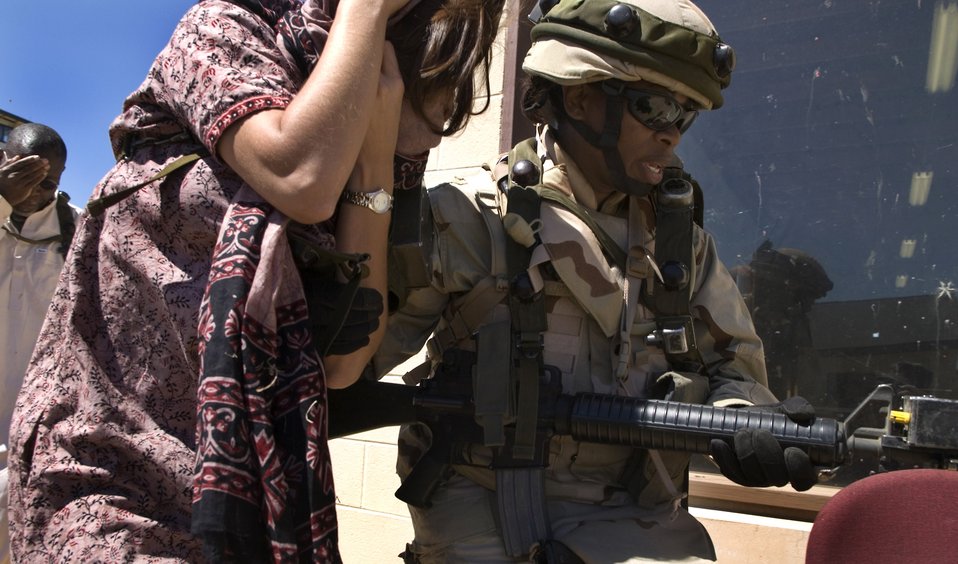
Provincial Reconstruction Team training

Capt. Jacqueline King, a physician assistant from Hickam Air Force Base, Hawaii, helps simulated victims during training Tuesday, April 4, 2006, at Fort Bragg, N.C. Captain King is part of a multi-service provincial reconstruction team whose aim is to help with the reconstruction, security and governing of Afghanistan. The team is training in the United States before deploying for a year.